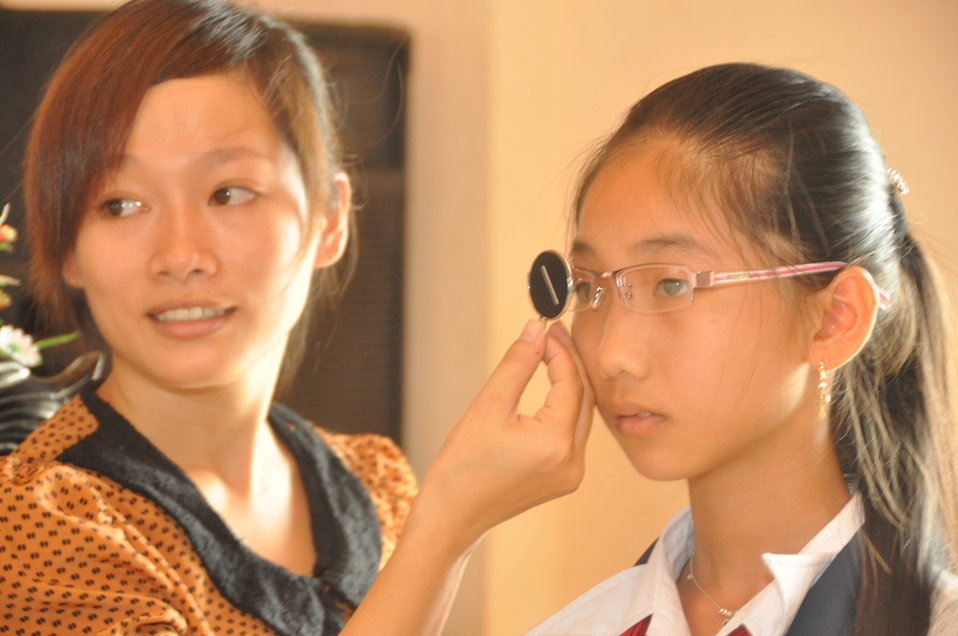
School children in Dak To, Kon Tum Province, receive eyeglasses under a program supported by USAID and partners HKI and World Learning